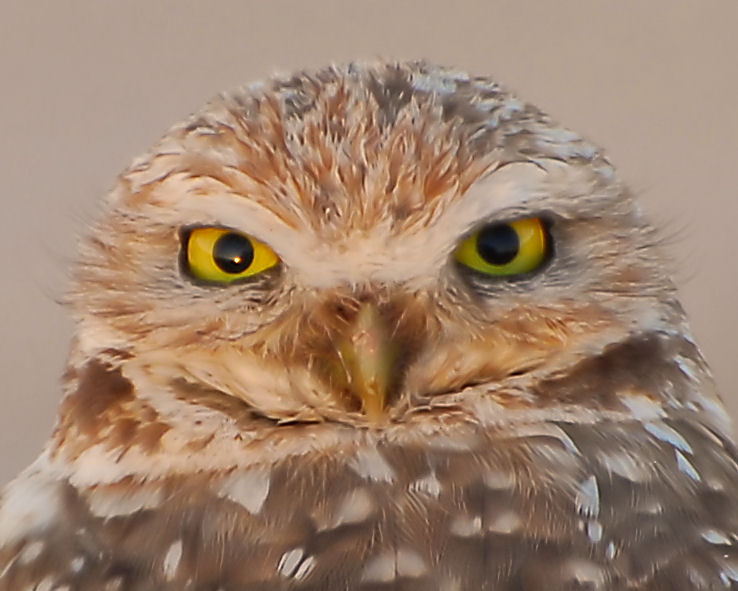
Burrowing Owl near Las Vegas, Nevada